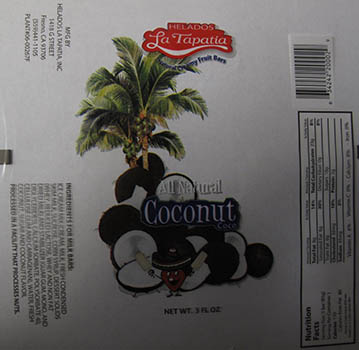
RECALLED – Ice cream products

March 19, 2014 – Product Recall – Helados La Tapatia, Inc. Recalls Products Because of Possible Health Risk.